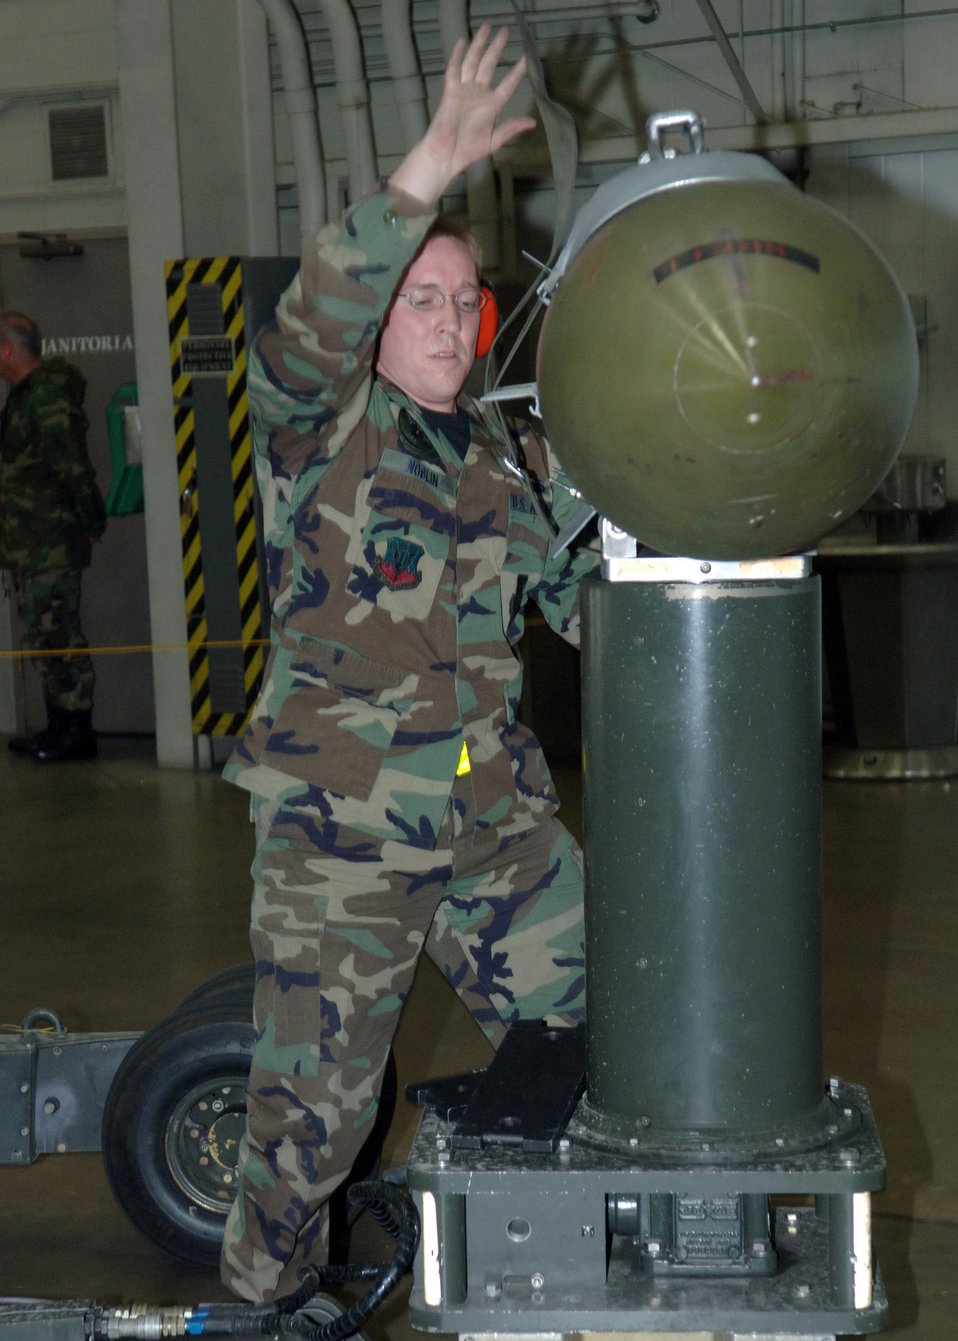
Weapons Load Crew Competition

Senior Airman Eric Noblin loads a weapon during a crew competition at Ellsworth Air Force Base, S.D., on Friday, April 7, 2006. Each crew is rated on their time and efficiency when loading bombs onto the armament systems trainer. Airman Noblin is an aircraft armament systems specialist with the 34th Aircraft Maintenance Unit.